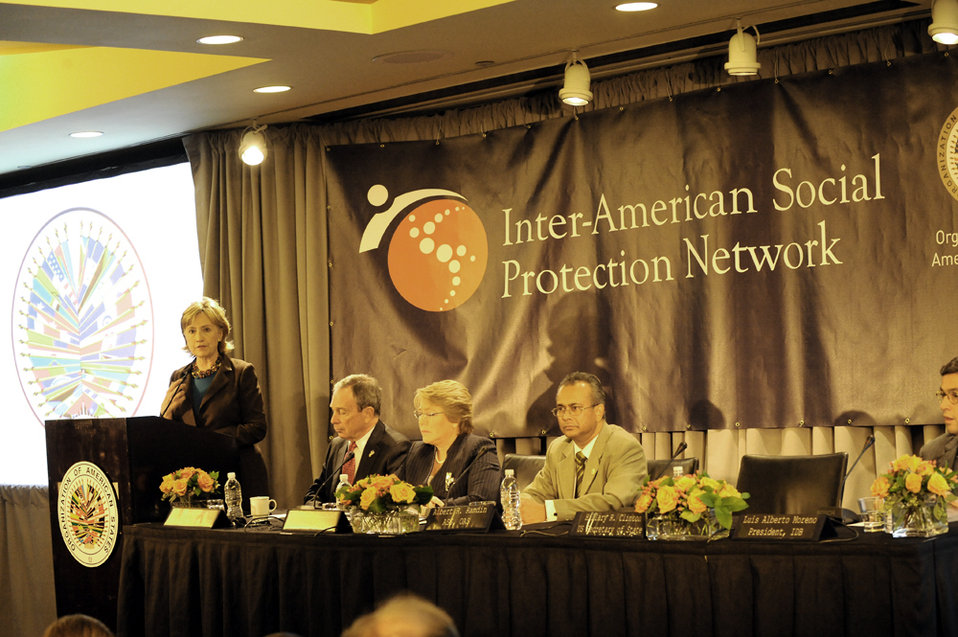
UNGA 2009: Secretary Clinton Speaks at Inter-American Social Protection Network

U.S. Secretary of State Hillary Rodham Clinton delivers remarks at the Launch of the Inter-American Social Protection Network at the Westin hotel during the 64th Session of the UN General Assembly in New York City, New York September 22, 2009.